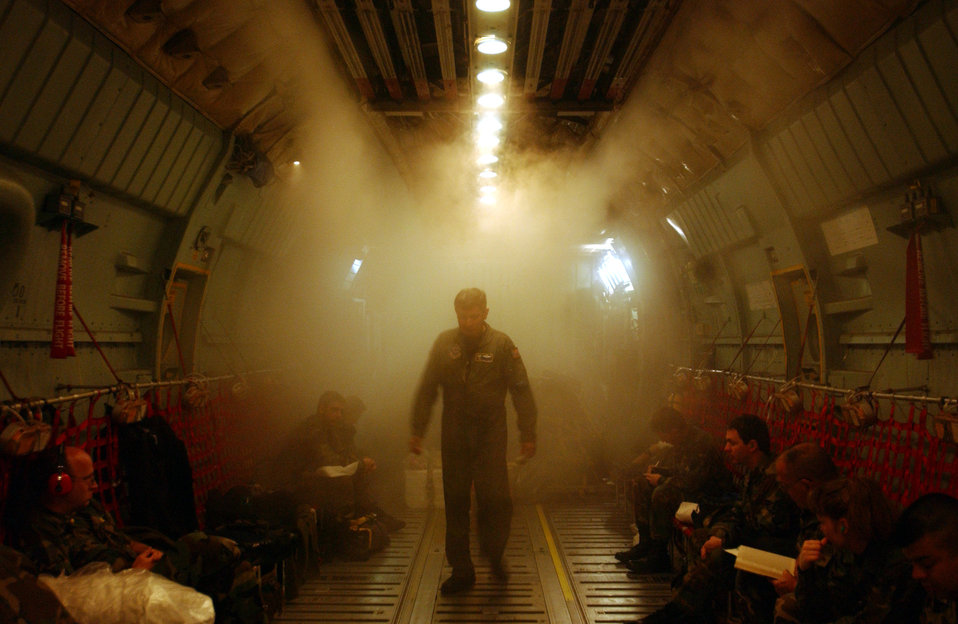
Operation Deep Freeze

PAGO PAGO, American Samoa (AFPN) -- Master Sgt. Robert Rodarte walks through condensation fog in the rear of a C-141 Starlifter during a mission supporting Operation Deep Freeze. The aircraft had just been refueled here en route to Christchurch, New Zealand. Condensation fog is formed when the air-conditioning system is first turned on in a high-humidity environment. Rodarte is a loadmaster assigned to 729th Airlift Squadron at March Air Reserve Base, Calif.